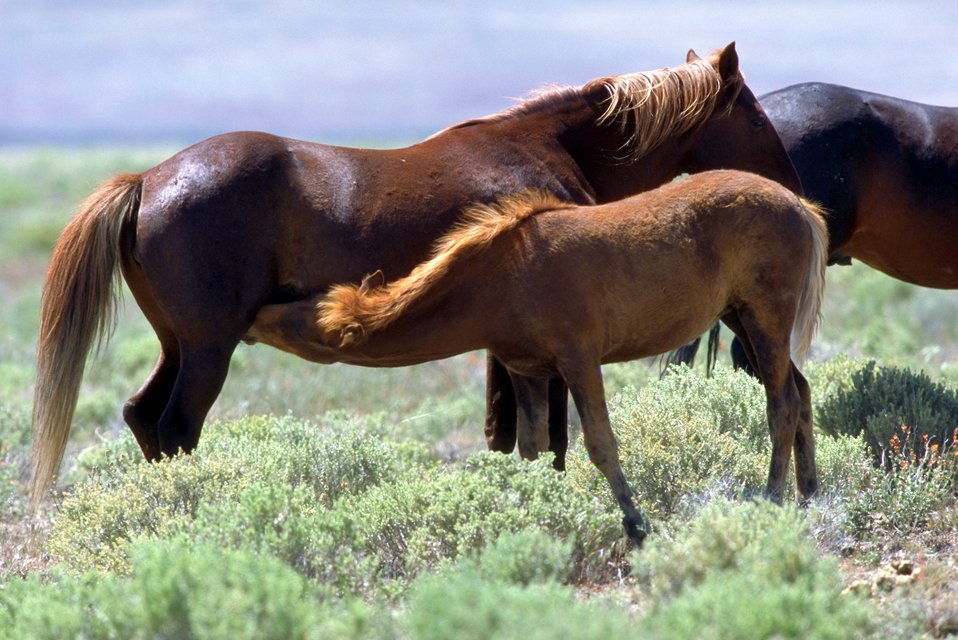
Onaqui Herd near Dugway, Utah.